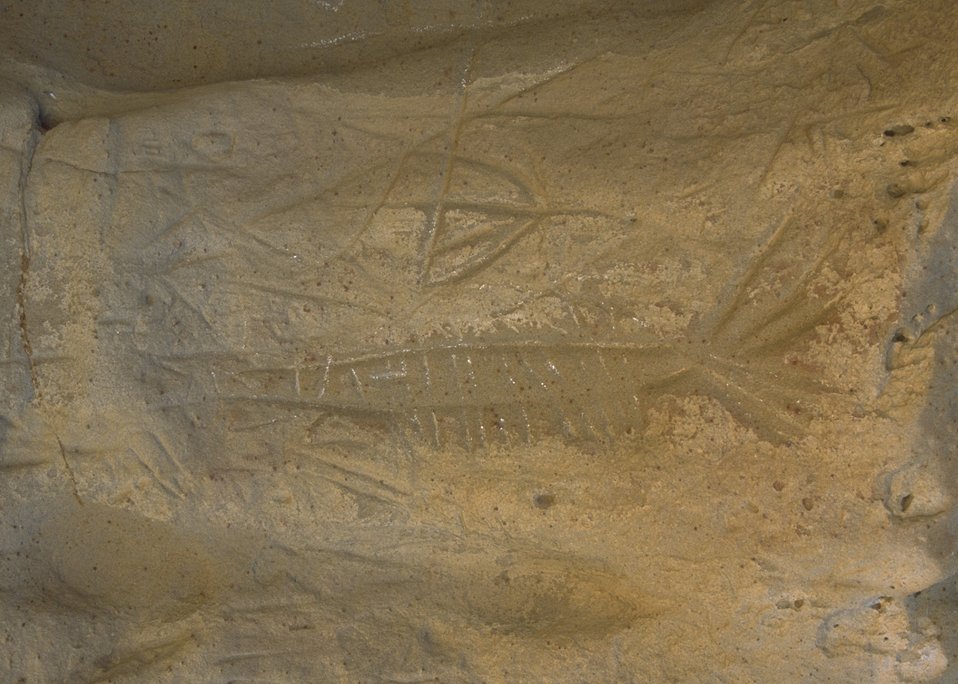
White Mountain Petroglyphs, Rock Springs Field Office.